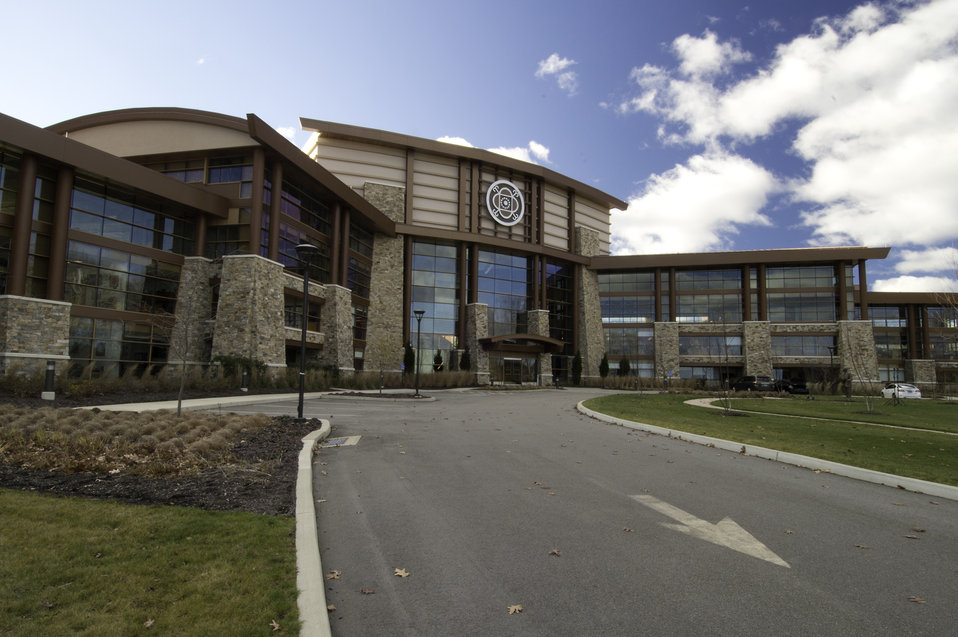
A U.S. Department of Agriculture (USDA) Rural Development (RD) Community Facility Loan was provided to the Mohegan Tribe for the construction of the Mohegan Tribe Community Center and Government Building in Uncasville, CT. USDA’s RD Community Facilities Programs makes and guarantees loans to develop essential community facilities in rural areas and towns of up to 20,000 in population. Loans and guarantees are available to public entities such as municipalities, counties, parishes, boroughs, and special-purpose districts, as well as to non-profit corporations and tribal governments. These funds can be used to construct, enlarge, or improve community facilities for health care, public safety, and public services. The Mohegan Tribe's newly completed Community Center and Government Building allows the tribal government to more fully and effectively administer the tribal government, health, housing and social programs of the Tribe and provide cultural resources and community gathering, and activities for its members. The 160,000 square foot building Center hosts an exhibit celebrating federal recognition, history of Mohegan Chiefs, a new Library and Archives space, new Arts and Crafts room, a new gymnasium, and a new community room to enjoy food and family. The Center will continue the Tribe’s plan for growth and meeting the needs of its members. The ability to finance the project at reasonable rates through the USDA RD Community Facilities Programs ensures that the Tribal government more efficiently and effectively can manage the administration of essential government functions.